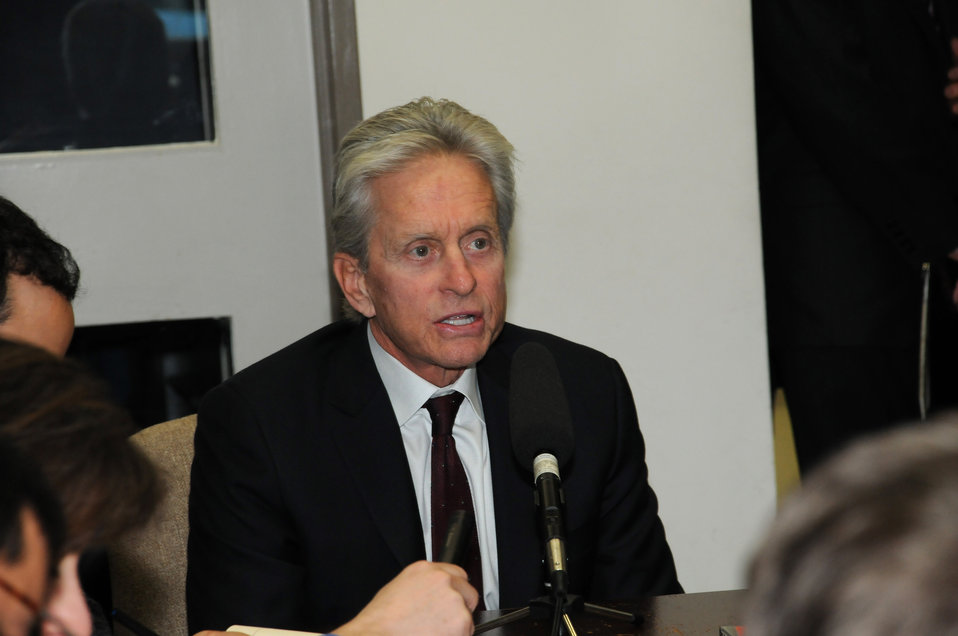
Actor Michael Douglas Speaks With Members of the State Department Press Corps

Actor Michael Douglas speaks with members of the U.S. Department of State's press corps during his visit to the U.S. Department of State in Washington, D.C., on November 3, 2011.